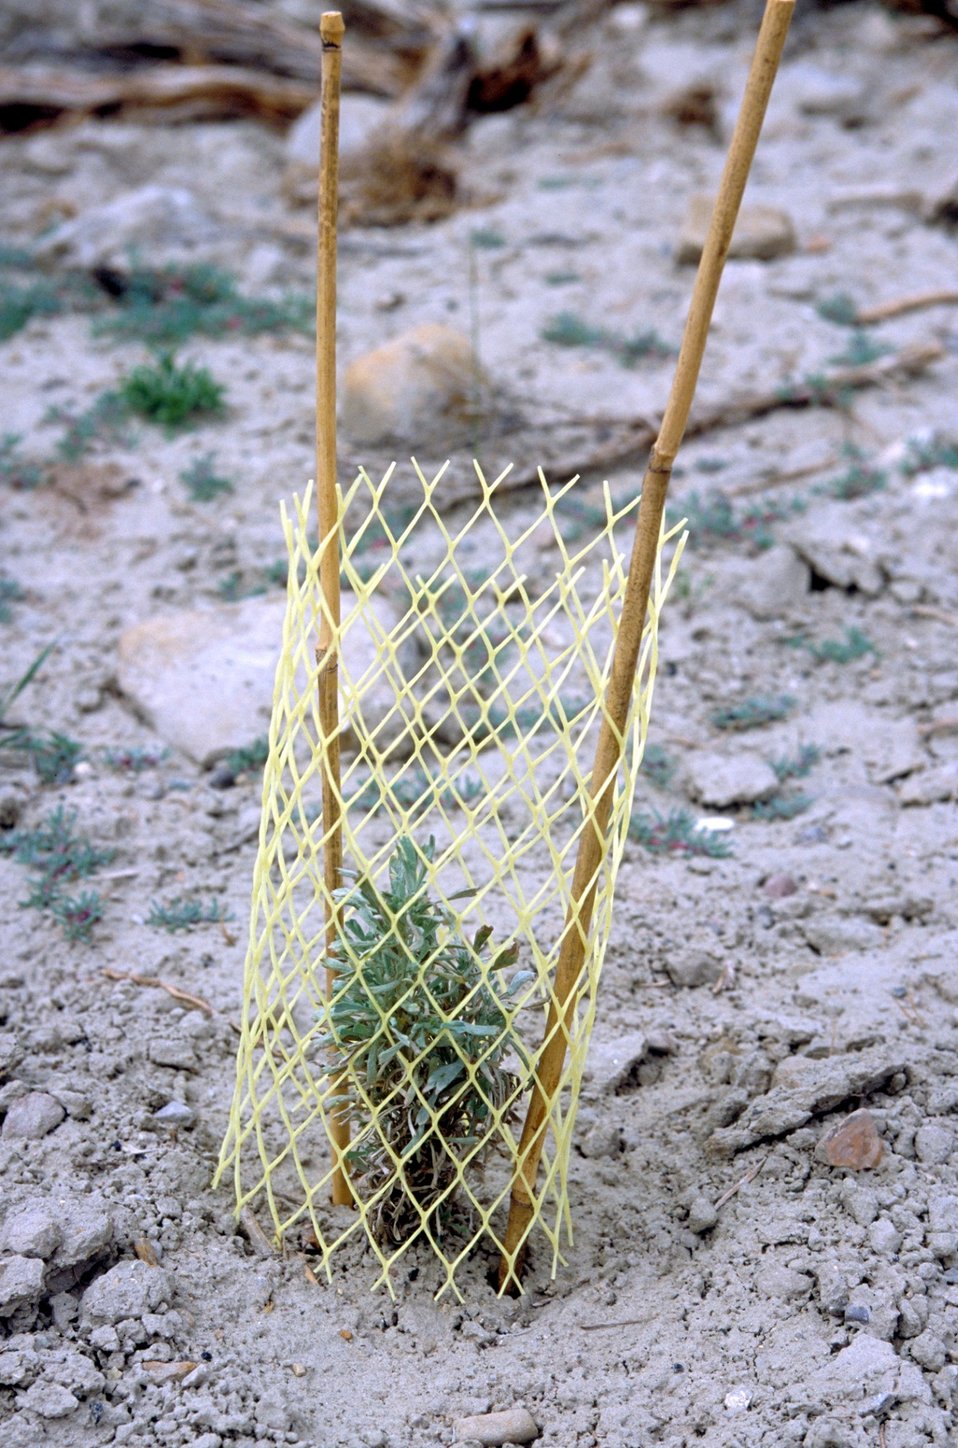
Rehab in coal bed methane production units near Price, Utah.